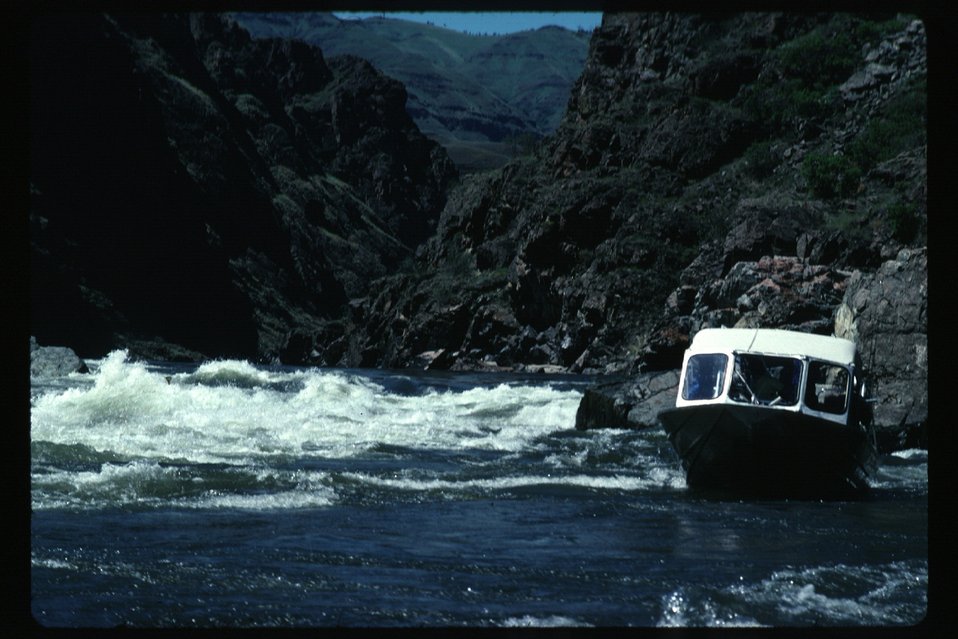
White water jetboat Lower Salmon River Cottonwood Field Office UCSC Upper Columbia Salmon Clearwater District